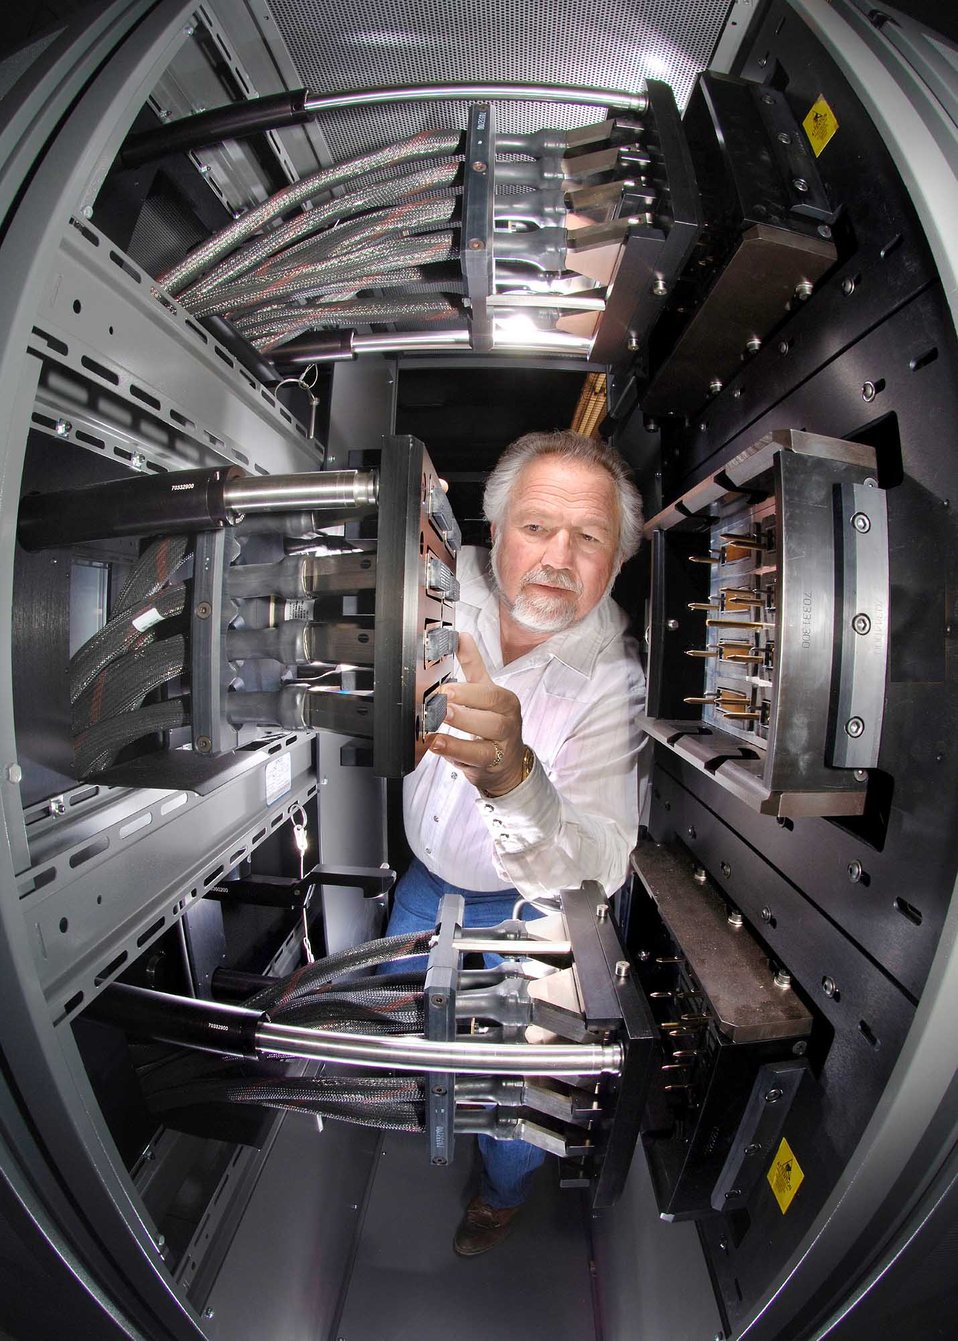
A TECHNICIAN WORKS ON THE RED STORM SUPERCOMPUTER AT SANDIA NATIONAL LABORATORY.

Red Storm has two first place benchmarks measure the efficiency of keeping track of data (called random access memory), and of communicating data between processors. An unusual feature of Red Storm's architecture is that the computer can do both classified work with the throw of a few switches. The architecture was design by Sandia. The lab has partnered with Cray, Inc to sell 15 copies of supercomputer in various sizes to U.S. government agencies and universities, and customers in Canada, England, Switzerland, and Japan